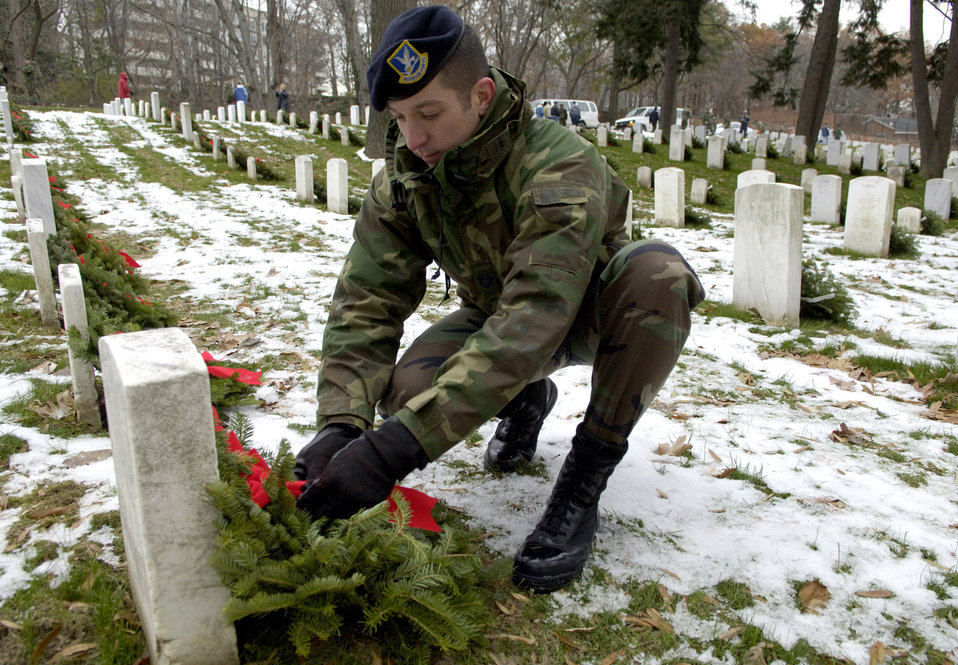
Wreaths Across America

Veterans' memorials and gravesites across the nation will be adorned with remembrance wreaths on Dec. 15 through a program known as Wreaths Across America. Some 32,144 wreaths are scheduled to be placed in cemeteries and memorials on that day.